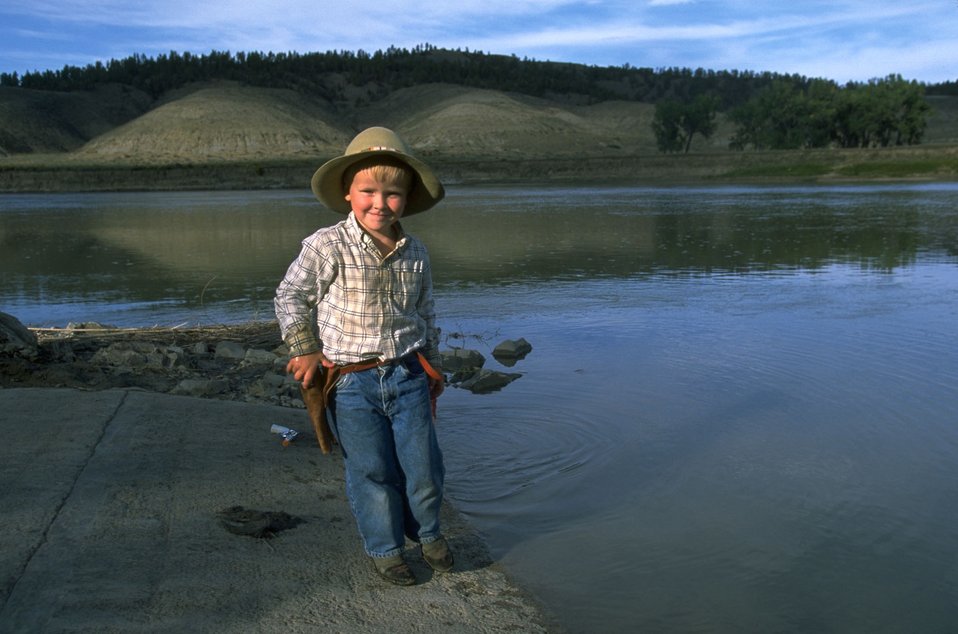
Young outdoorsman at Kipp Recreation Area